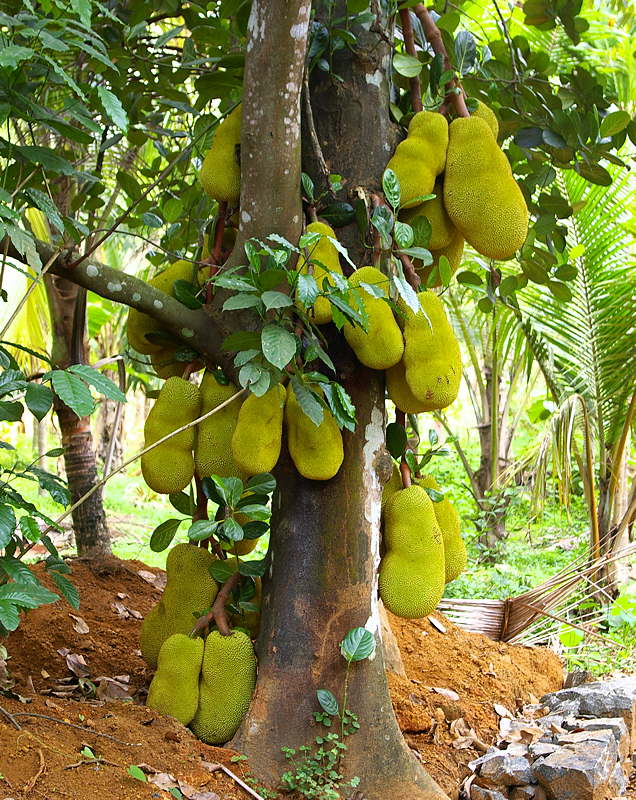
Queen of fruits